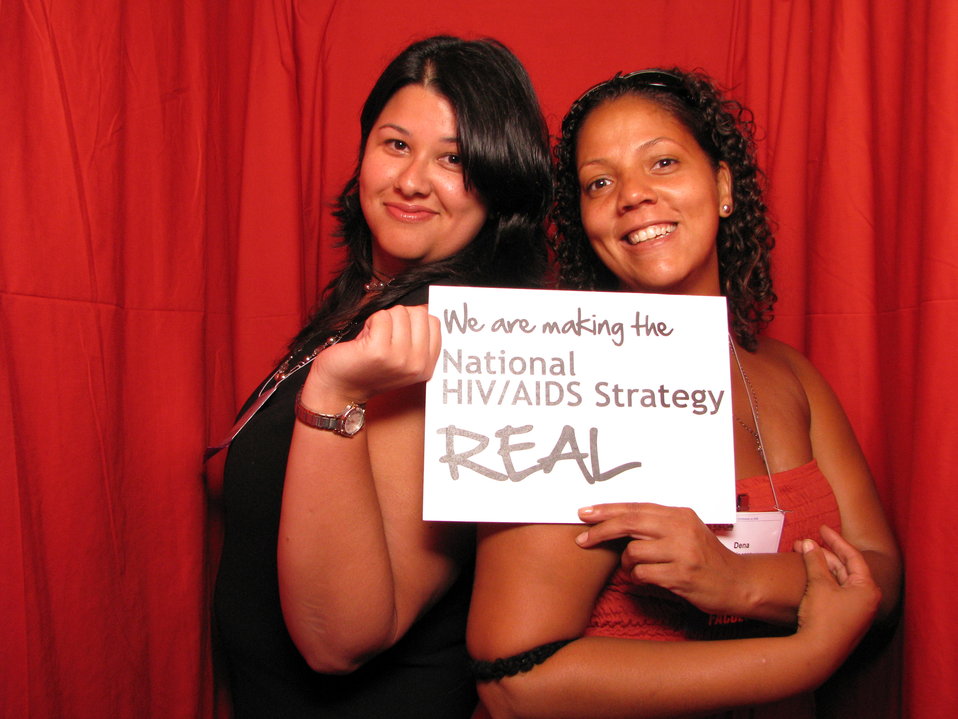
We are making the National HIV/AIDS Strategy REAL

From the AIDS.gov photo booth at the U.S. Conference on AIDS, September 2010 (Orlando, FL).